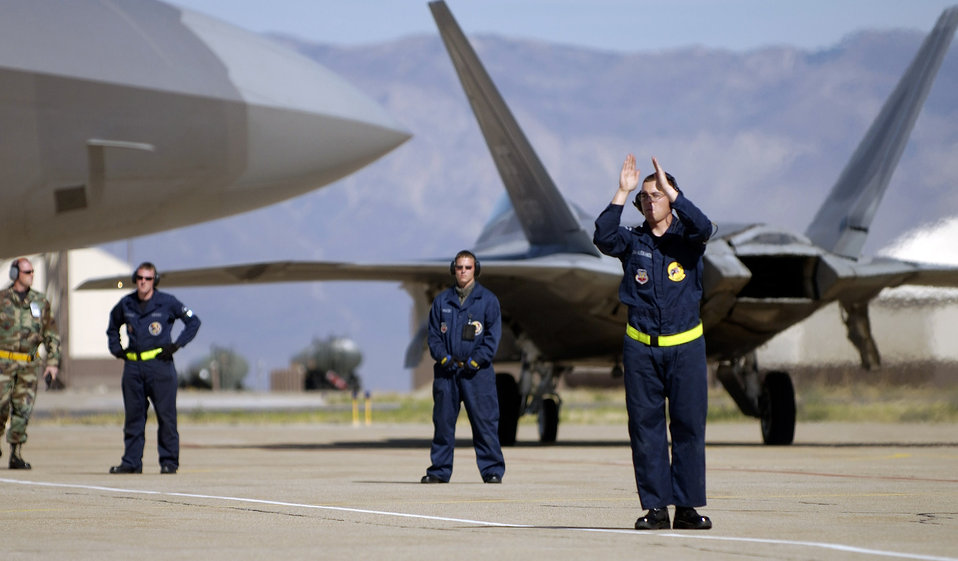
Combat Hammer

HILL AIR FORCE BASE, Utah -- Crew chief Senior Airman Alexander launches an F/A-22 Raptor for a Combat Hammer mission here. The maintainer deployed from Langley Air Force Base, Va., with the 27th Aircraft Maintenance Unit to support the 27th Fighter Squadron during its first-ever deployment. The deployment has a twofold goal: complete a deployment and to generate a combat-effective sortie rate away while deployed.